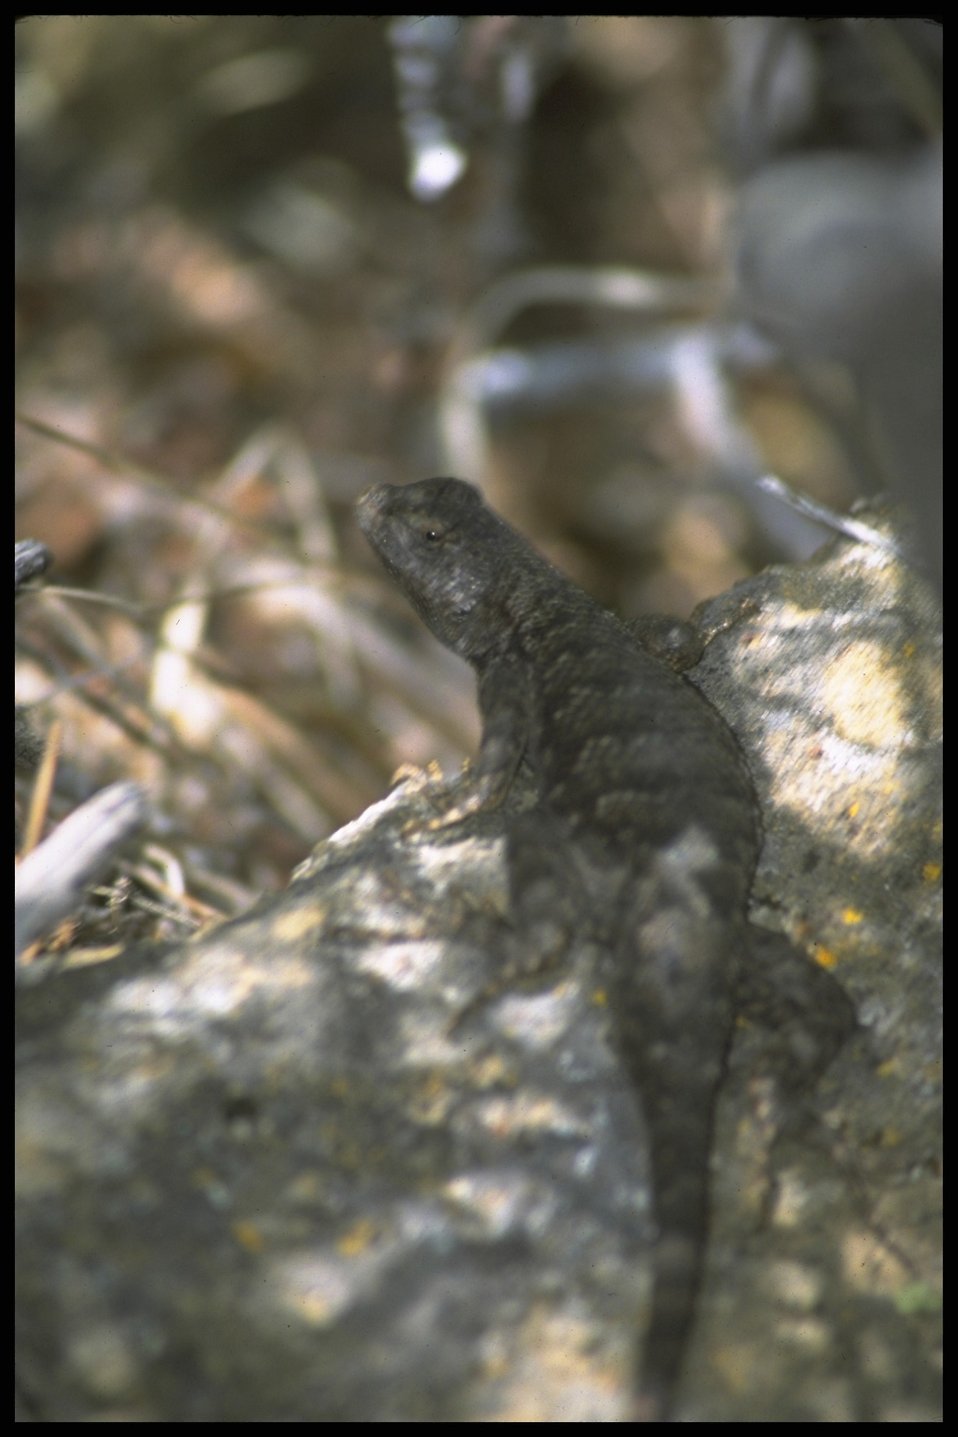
Close shot of lizard, Lakeview District.